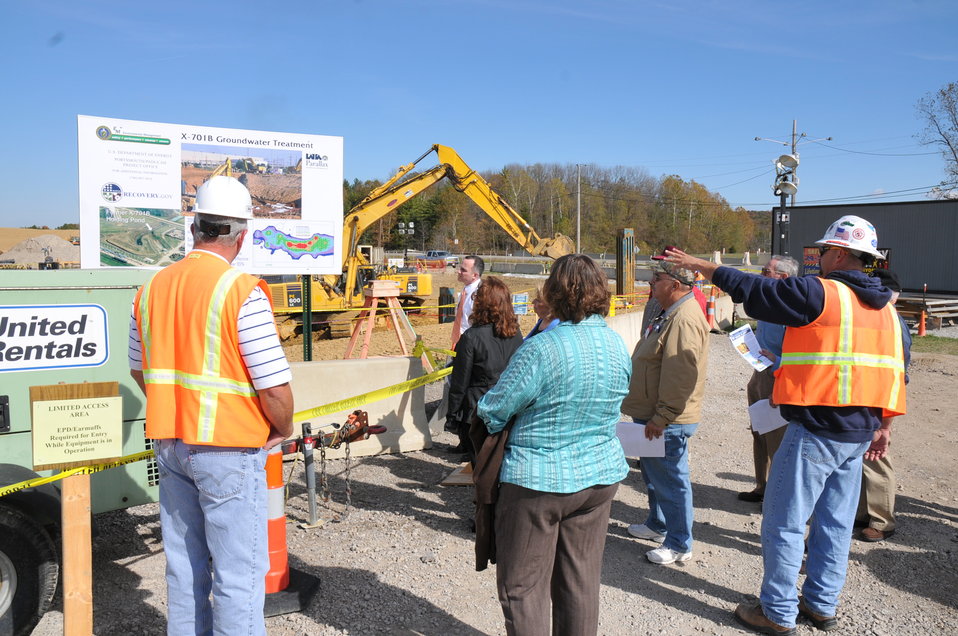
Recovery Act Workers Reduce Contaminant Levels Sharply in Portsmouth Site ‘Big Dig’

Members of the Portsmouth EM Site-Specific Advisory Board receive a field briefing on the Recovery Act-funded groundwater source removal project at the Portsmouth Gaseous Diffusion Plant.